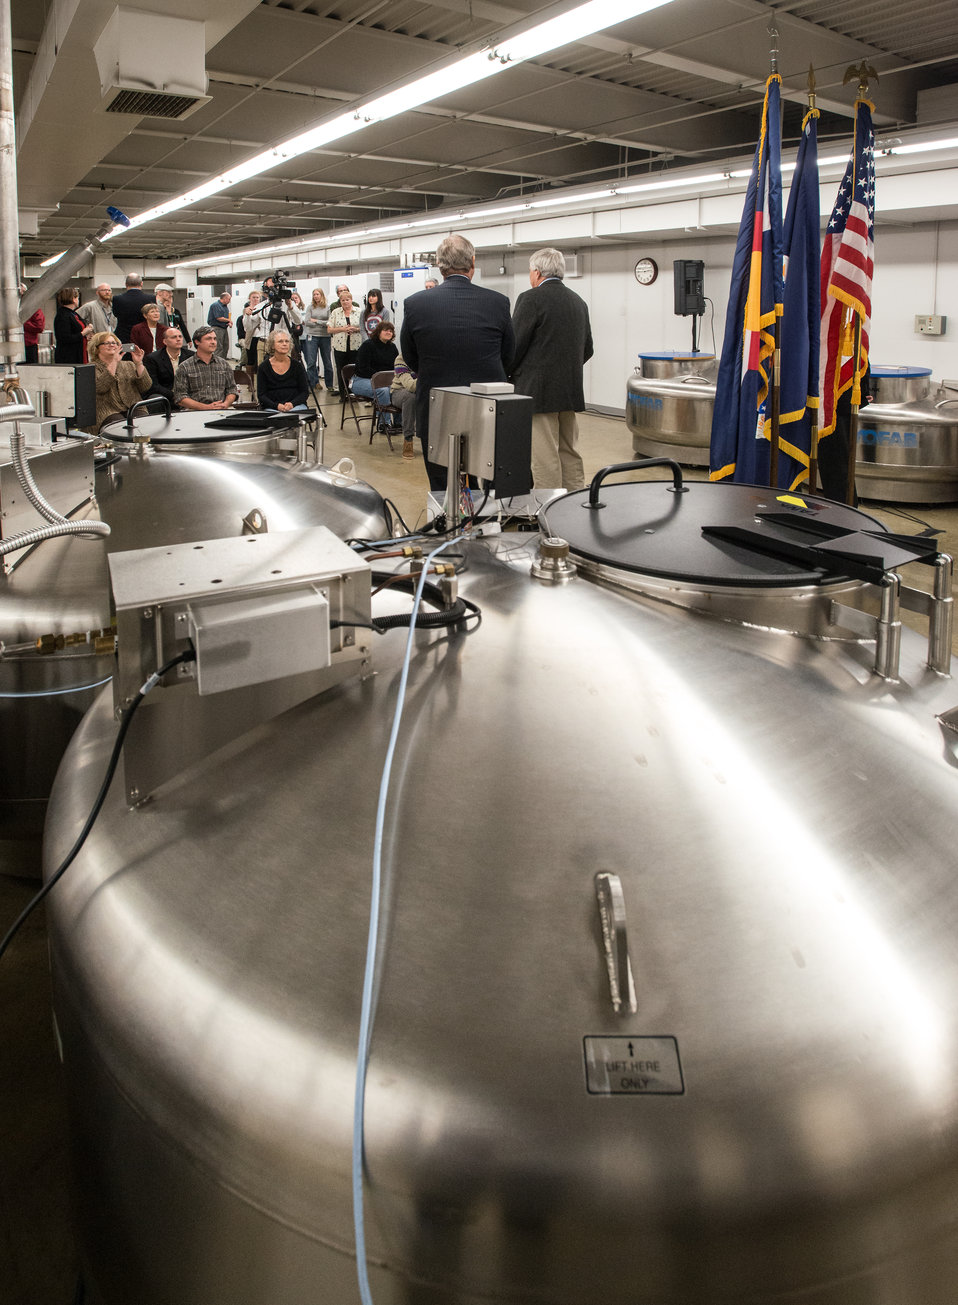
U.S. Department of Agriculture (USDA) Agriculture Research Service (ARS) Northern Plains Area Director Dr. Larry Chandler introduces Agriculture Secretary Tom Vilsack to staff and media at USDA’s ARS National Center for Genetic Resources Preservation (NCGRP) in Ft. Collins, CO on Wednesday, Nov. 6, 2013. NCGRP is the largest agricultural gene bank facility in the U.S. The NCGRP staff conducts groundbreaking research to develop more efficient and effective means for preserving plant and animal germplasm, and for better understanding the genetic structure of these invaluable materials. The research findings, preservation techniques, and specialized technology developed by the NCGRP have been adopted by gene banks around the world: many international scientists travel to the NCGRP for research and training.